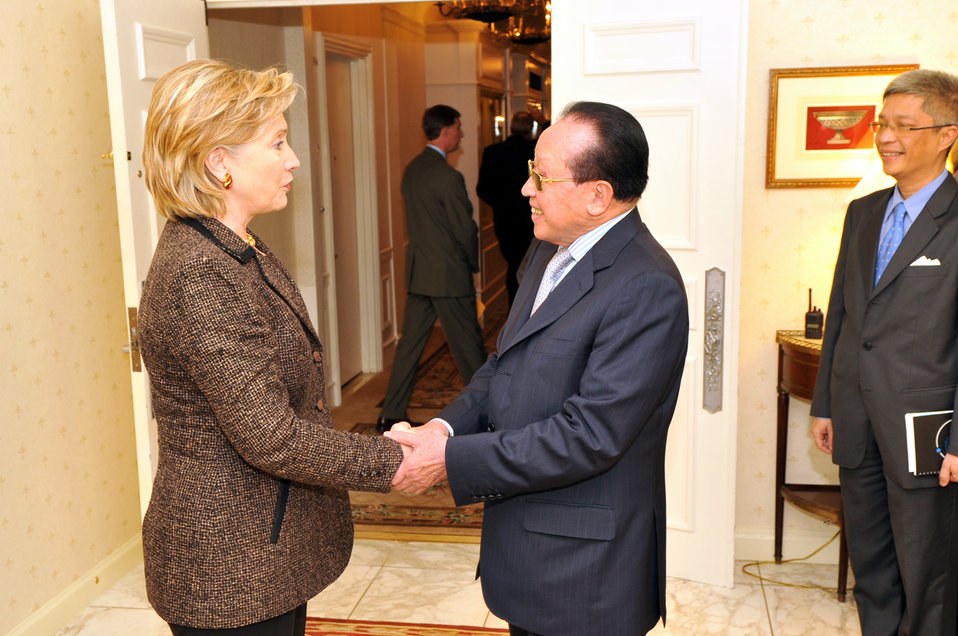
UNGA 2009: Secretary Clinton Meets With Cambodia Foreign Minister

U.S. Secretary of State Hillary Rodham Clinton meets with Cambodian Deputy Prime Minister and Foreign Minister Hor Namhong at the Waldorf Astoria hotel in New York City, New York September 28, 2009.